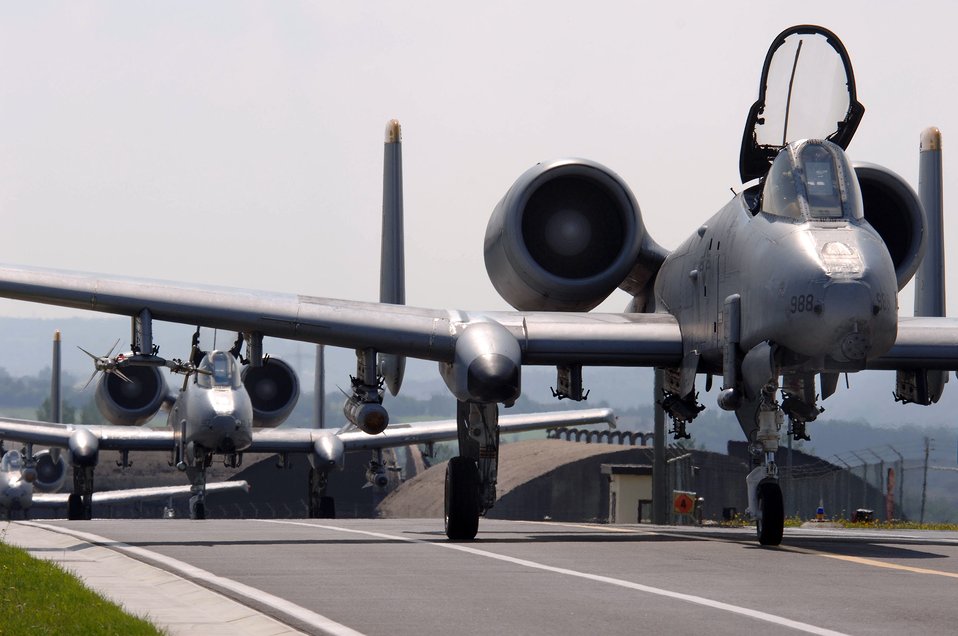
Training keeping Spangdahlem 'Warthogs' ready to deploy

SPANGDAHLEM AIR BASE, Germany -- Taking advantage of a sunny German day, A-10 Thunderbolt II aircraft taxi toward takeoff from this fighter base. The 81st Fighter Squadron's A-10 Thunderbolt II aircraft, the only ones stationed in U.S. Air Forces in Europe, work closely with NATO countries. The aircraft's capabilities are sought after by U.S. and NATO ground forces to provide close-air support, interdiction and combat search and rescue.